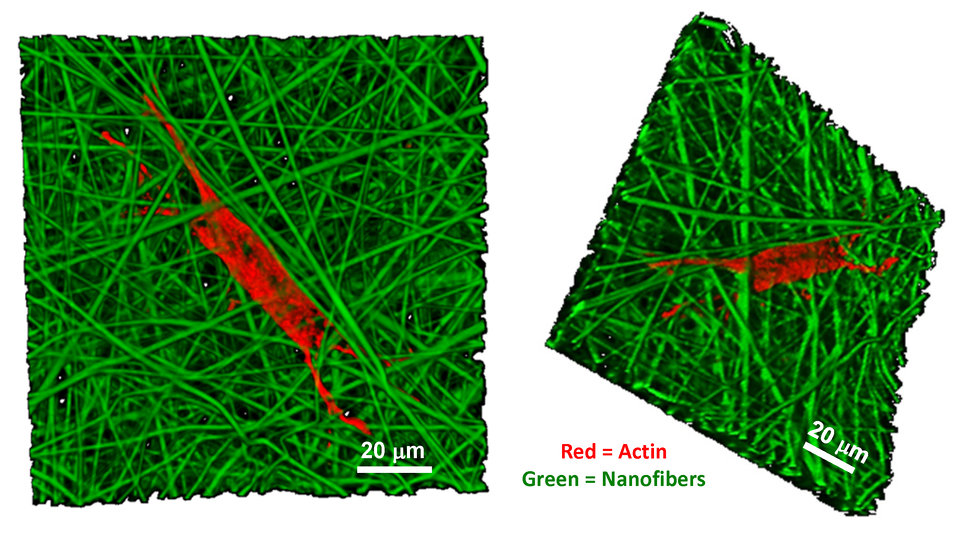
Nanofibers

Bone-like cell growth on nanofibers: confocal microscope images detail the growth of a human bone marrow stromal cell (actin filaments in the cell 'skeleton' are stained orange) on a nanofiber scaffold (green). The structure of thin fibers encourages stem cells to develop into the elongated, branched form characteristic of mature bone cells.